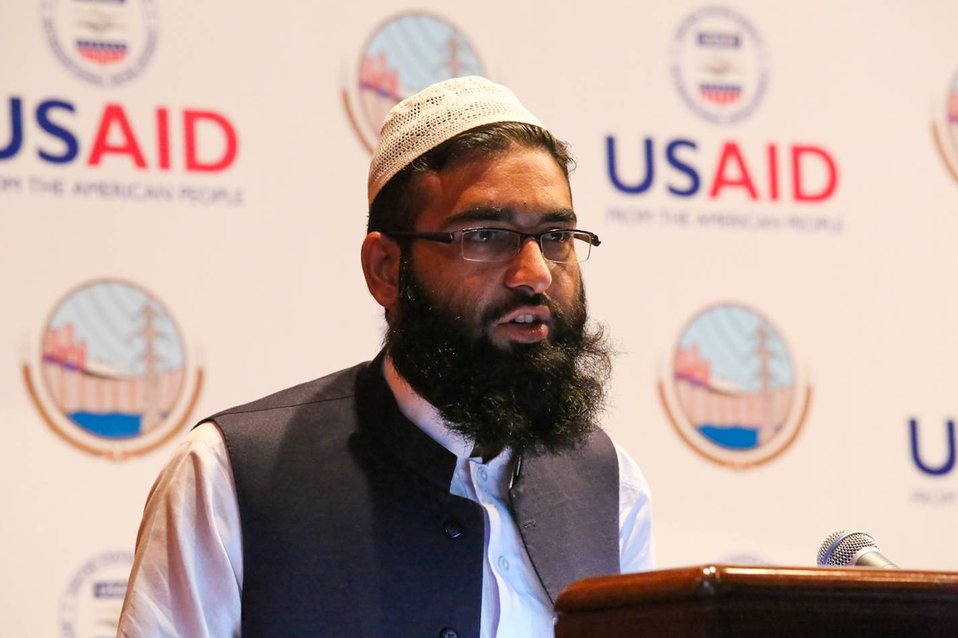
Islamabad, September 12, 2012 - Project Launch Ceremony of Waran Canal Irrigation System